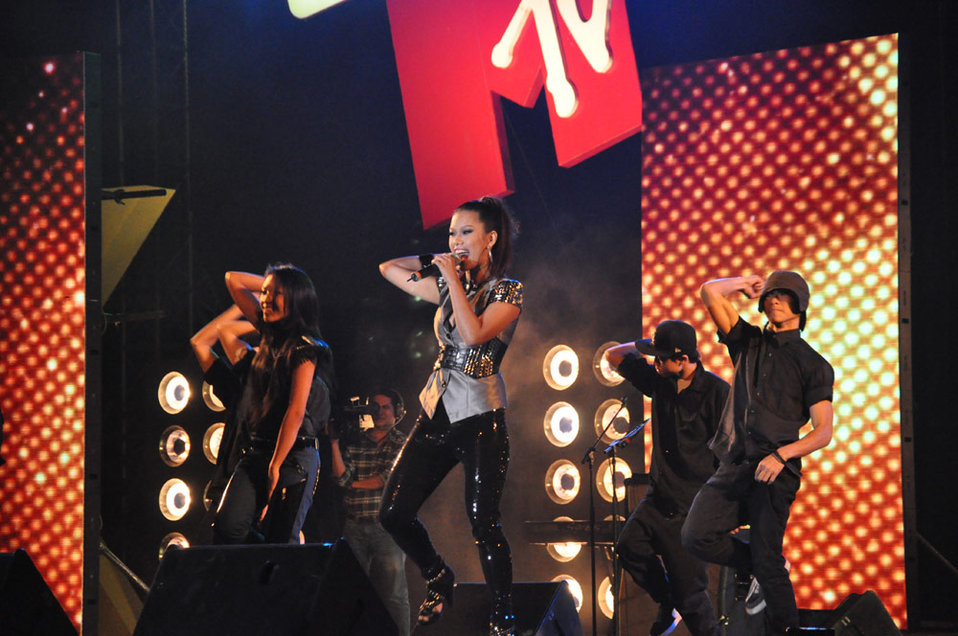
USAID Vietnam and MTVEXIT against Human Trafficking

Hanoi concert, March 27, 2010